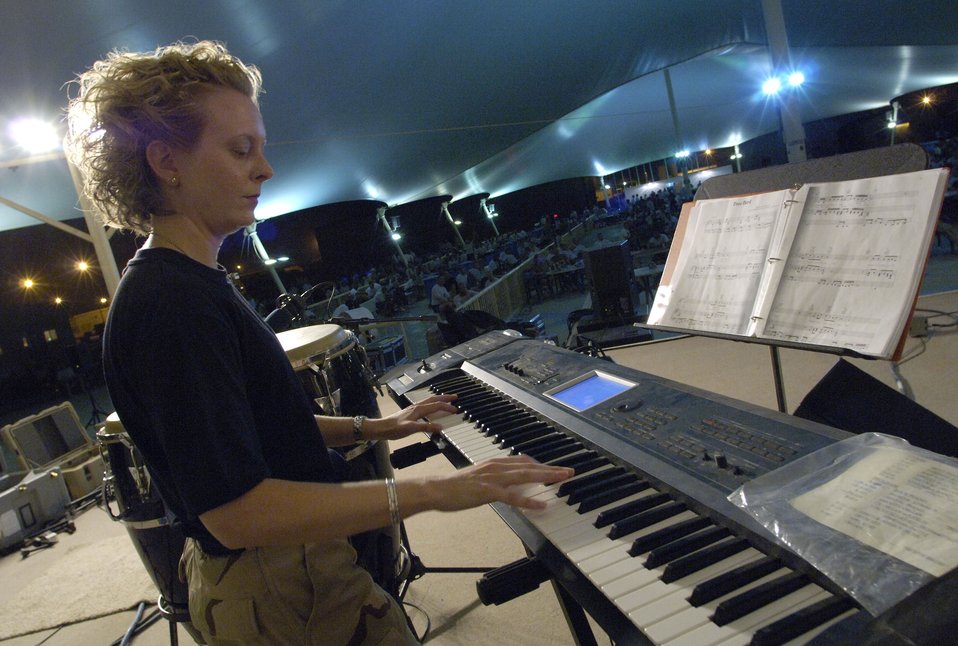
Staff Sgt. Amy Layhew of the U.S. Central Air Forces Expeditionary Band